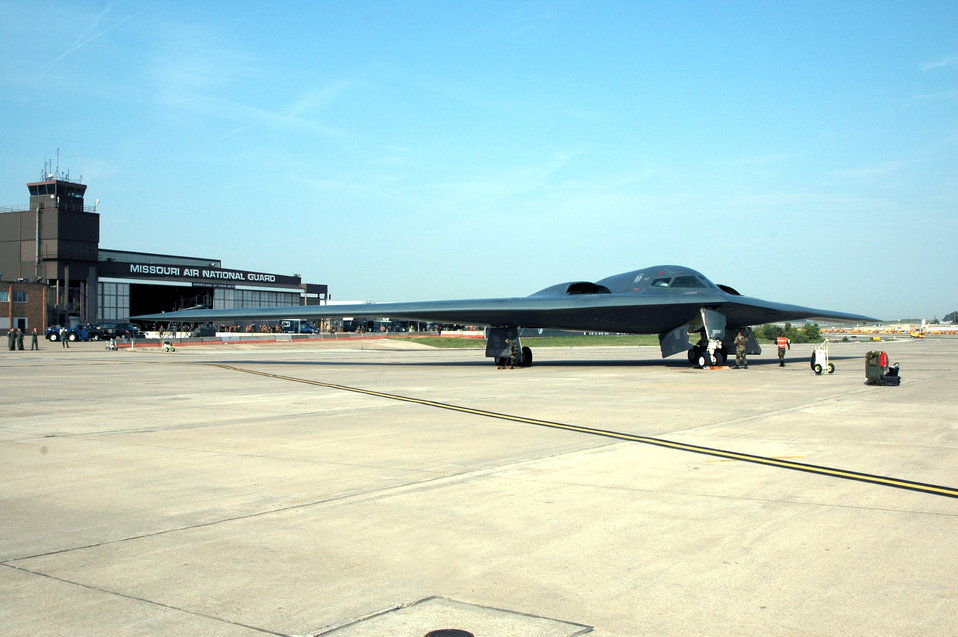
Missouri Air National Guard gets sneak preview of B-2

A B-2 Spirit stealth bomber sits on the tarmac at the 131st Fighter Wing at Lambert International Airport in St. Louis Sept. 9.